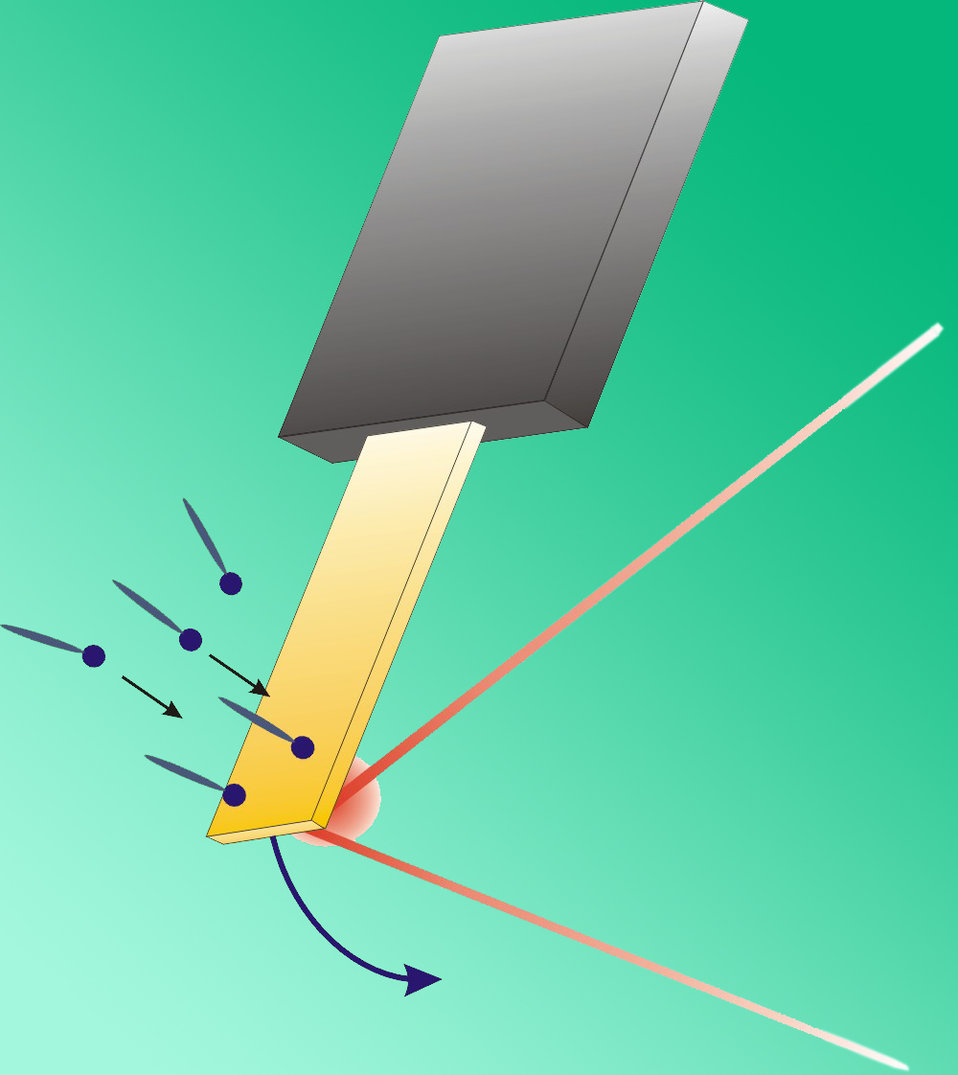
A Molecular Salve to Sooth Surface Stresses

NIST researchers measured the surface stress of a monolayer film on gold by measuring the changing curvature of a gold-coated glass cantilever as molecules of mercaptobenzoic acid were deposited on the gold. The change in curvature was detected by the shifting reflection of a laser beam impinging onto the back side of the glass.